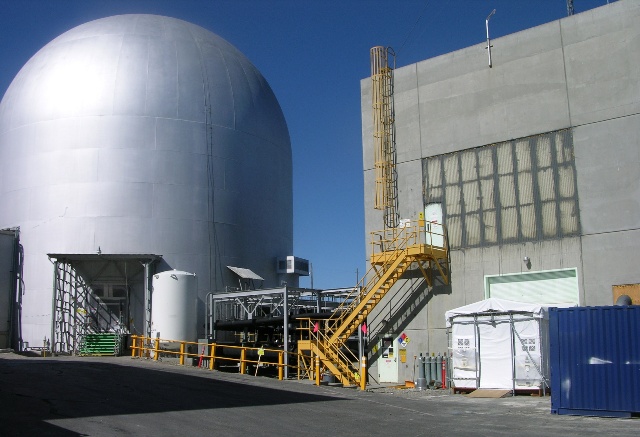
EBR II Idaho

The Experimental Breeder Reactor II will be reduced to a concrete monolith about eight feet above grade.